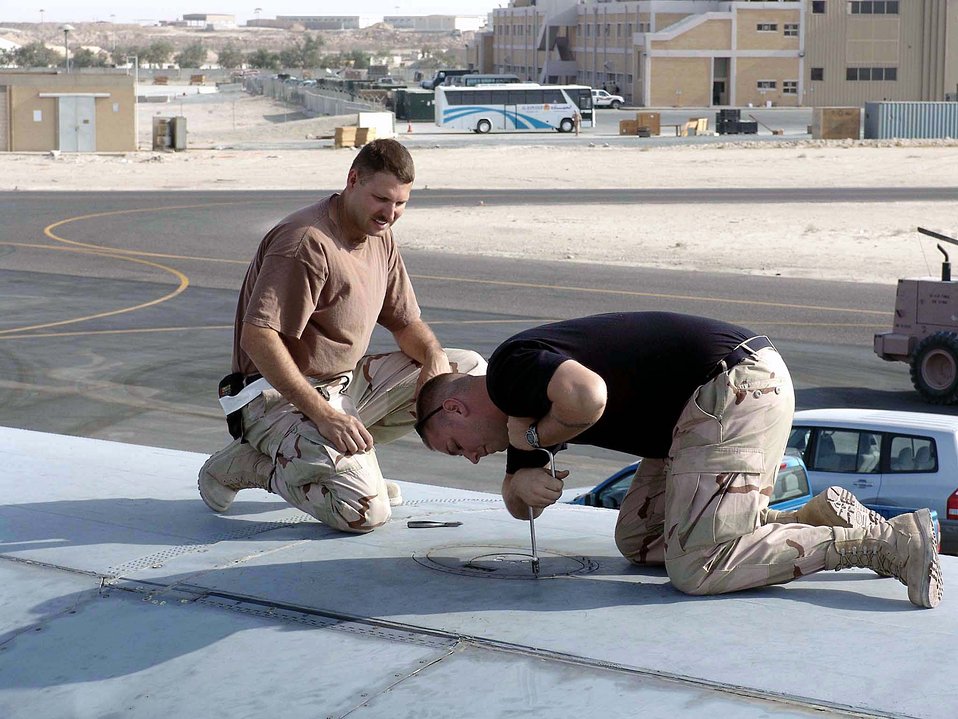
Gettin' ready

SOUTHWEST ASIA -- Tech. Sgt. Bill Herrin (left) and Airman 1st Class Brandon Blackston prepare a C-130 Hercules for a flight into Iraq on Oct. 18. They are assigned to the 746th Expeditionary Maintenance Squadron at a forward-deployed location. Airman Blackston is from Ramstein Air Base, Germany, and Sergeant Herrin is from the North Carolina Air National Guard.